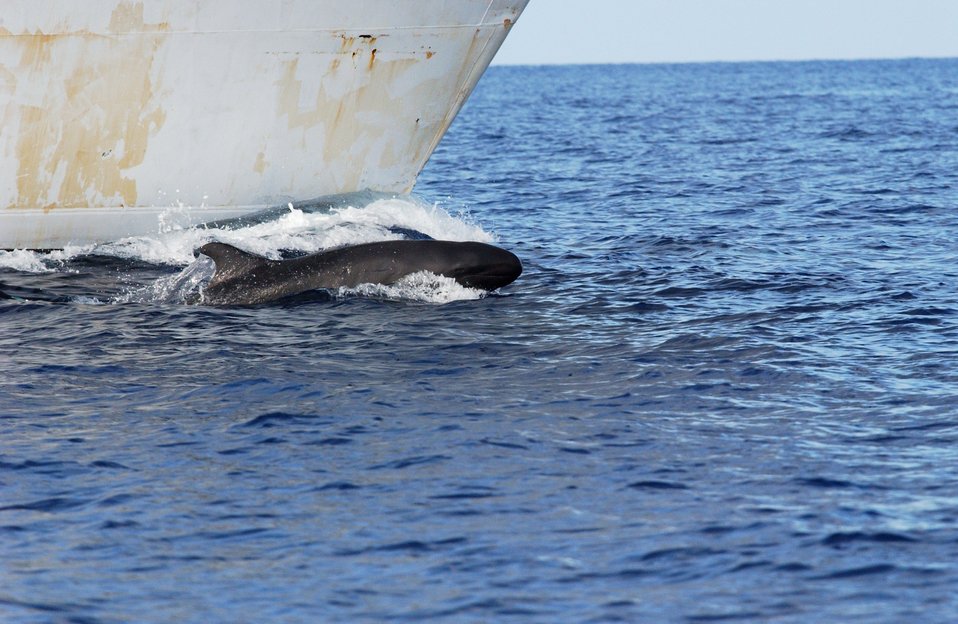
False killer whale